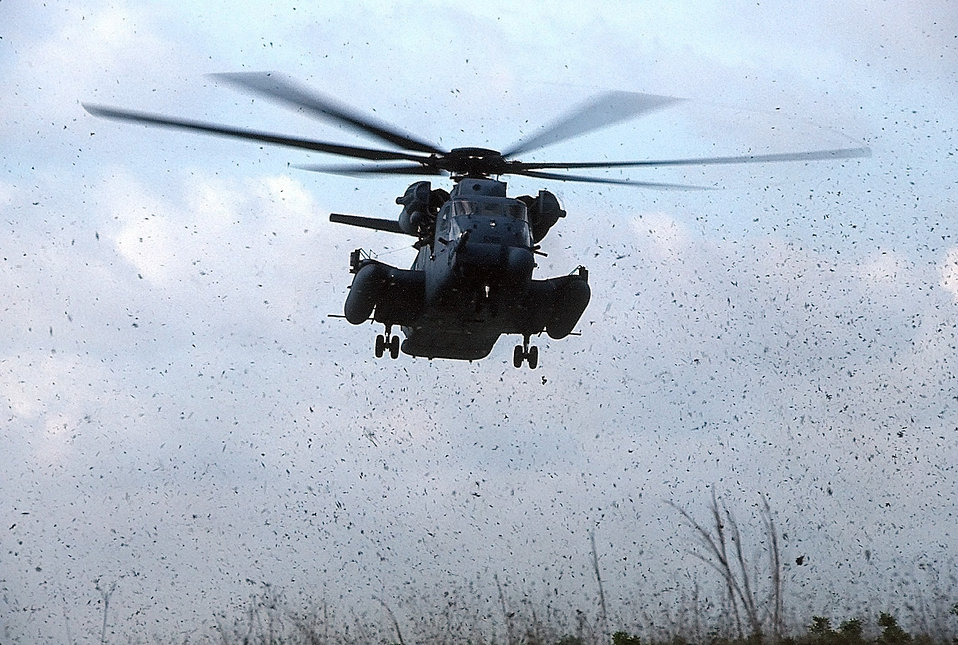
Green Hornets

FILE PHOTO -- The 20th Special Operations Squadron, located at Hurlburt Field, Fla., is one of eight flying squadrons within the 16th Special Operations Wing. Known as the